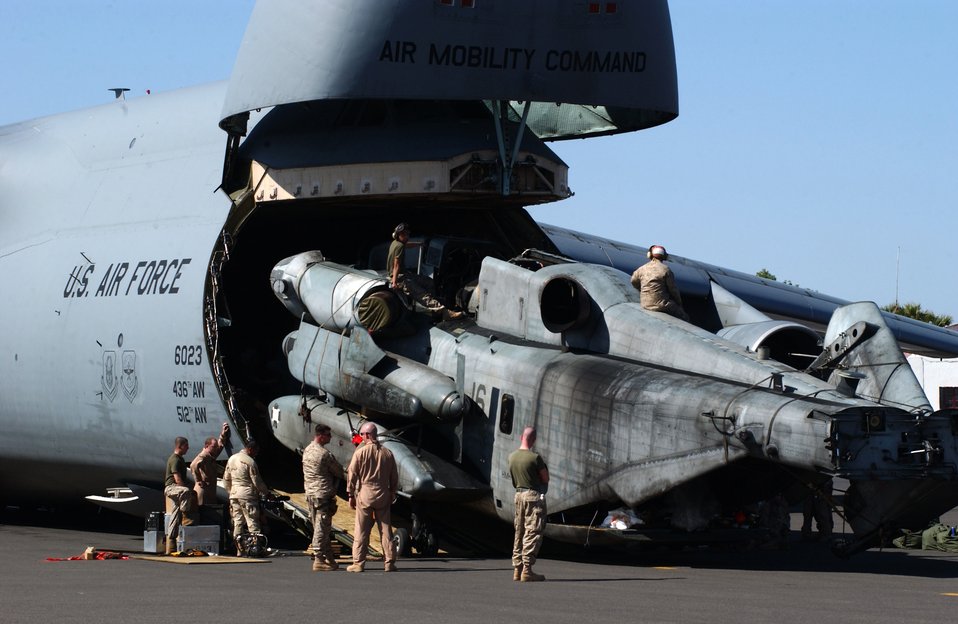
Offload

A U.S. Marine Corps CH-53E Super Stallion is offloaded from an Air Force C-5 Galaxy at the Djibouti Airport in Djibouti, Africa, Friday, March 3, 2006.